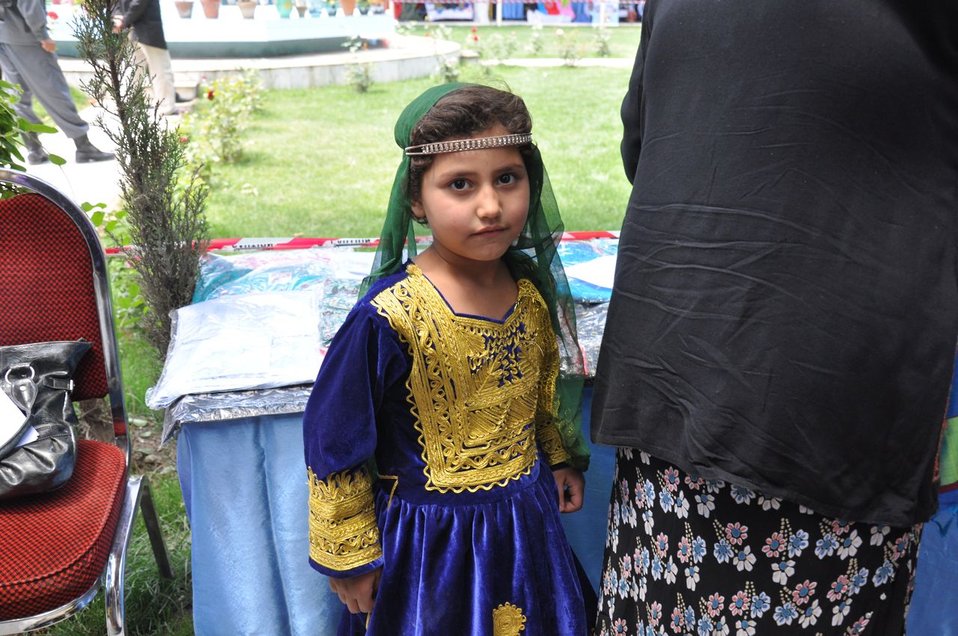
Mother's Day in Afghanistan

Beautiful child dresses up for the occasion